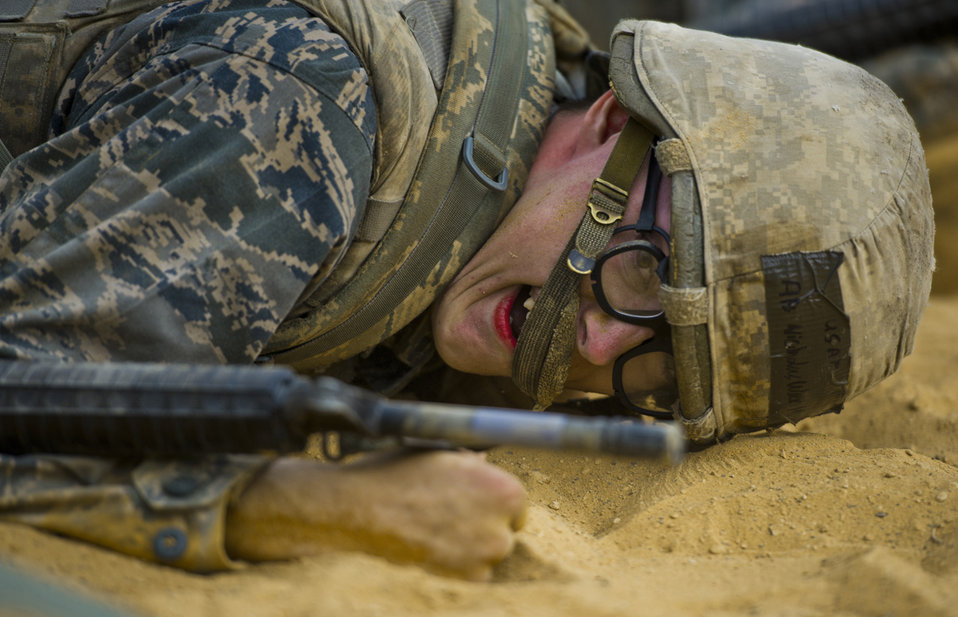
Get low

Air Force Basic Military Training trainee Nicholas Warila, with the 322nd Training Squadron's Flight 533, low crawls through an obstacle course during the Creating Leaders, Airmen and Warriors course July 27, 2011, at Medina Annex in San Antonio, Texas. Trainees are tested on leadership skills and teamwork, use and escalation of force, problem solving, and self-aid and buddy care.